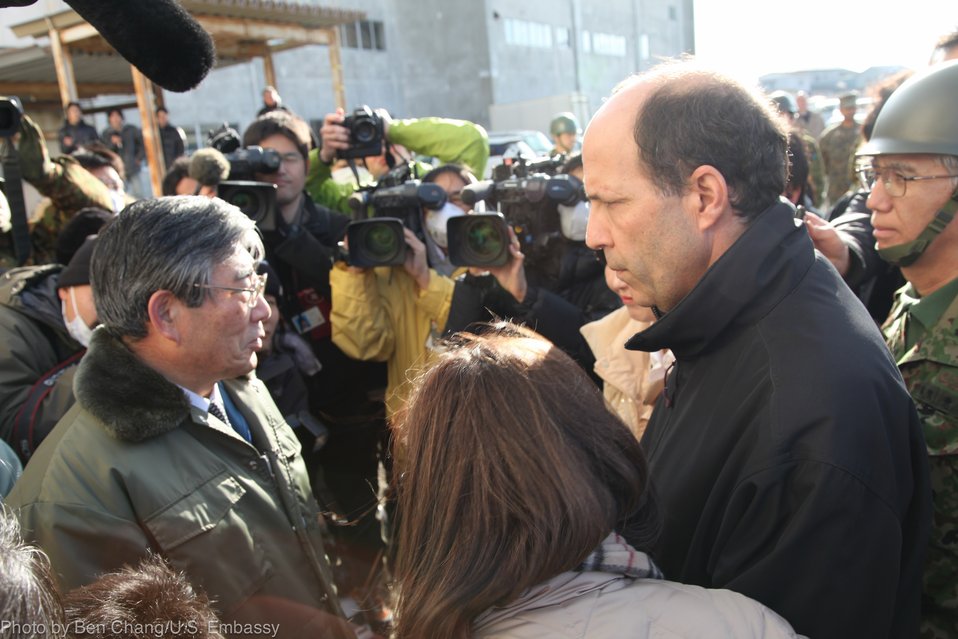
Ambassador Roos Discusses Relief Efforts With Ishinomaki Mayor Hiroshi Kameyama

U.S. Ambassador to Japan John Roos discusses relief efforts with the mayor of Ishinomaki, Hiroshi Kameyama, near Sendai, Japan, on March 23, 2011.